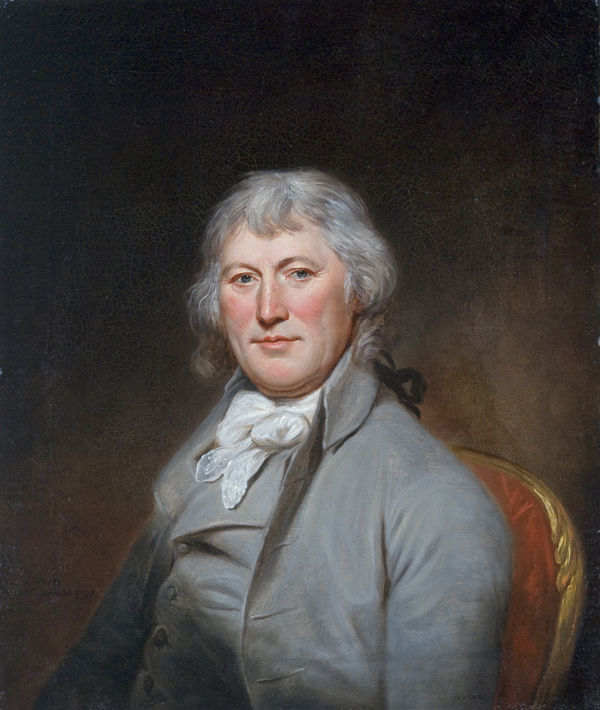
Portrait of James W. de Peyster, oil on canvas painting by Charles Willson Peale, 1798, San Antonio Museum of Art